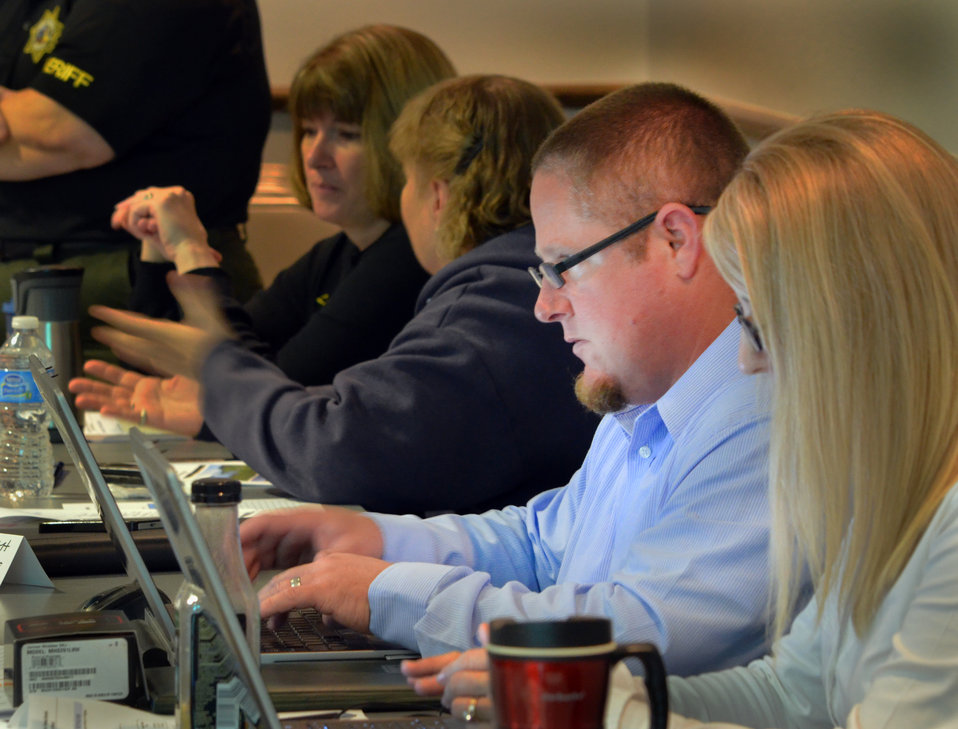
Orland emergency response exercise

Doug Plitt, senior park ranger at Pine Flat Dam, U.S. Army Corps of Engineers Sacramento District, monitors progress during the simulated flood event exercise. The U.S. Army Corps of Engineers Sacramento District joined local, state and other federal agencies in Orland, Calif., Nov. 20, to practice emergency response coordination for use in a regional flood emergency. The desktop exercise provided an opportunity for face-to-face communication between emergency agency personnel.